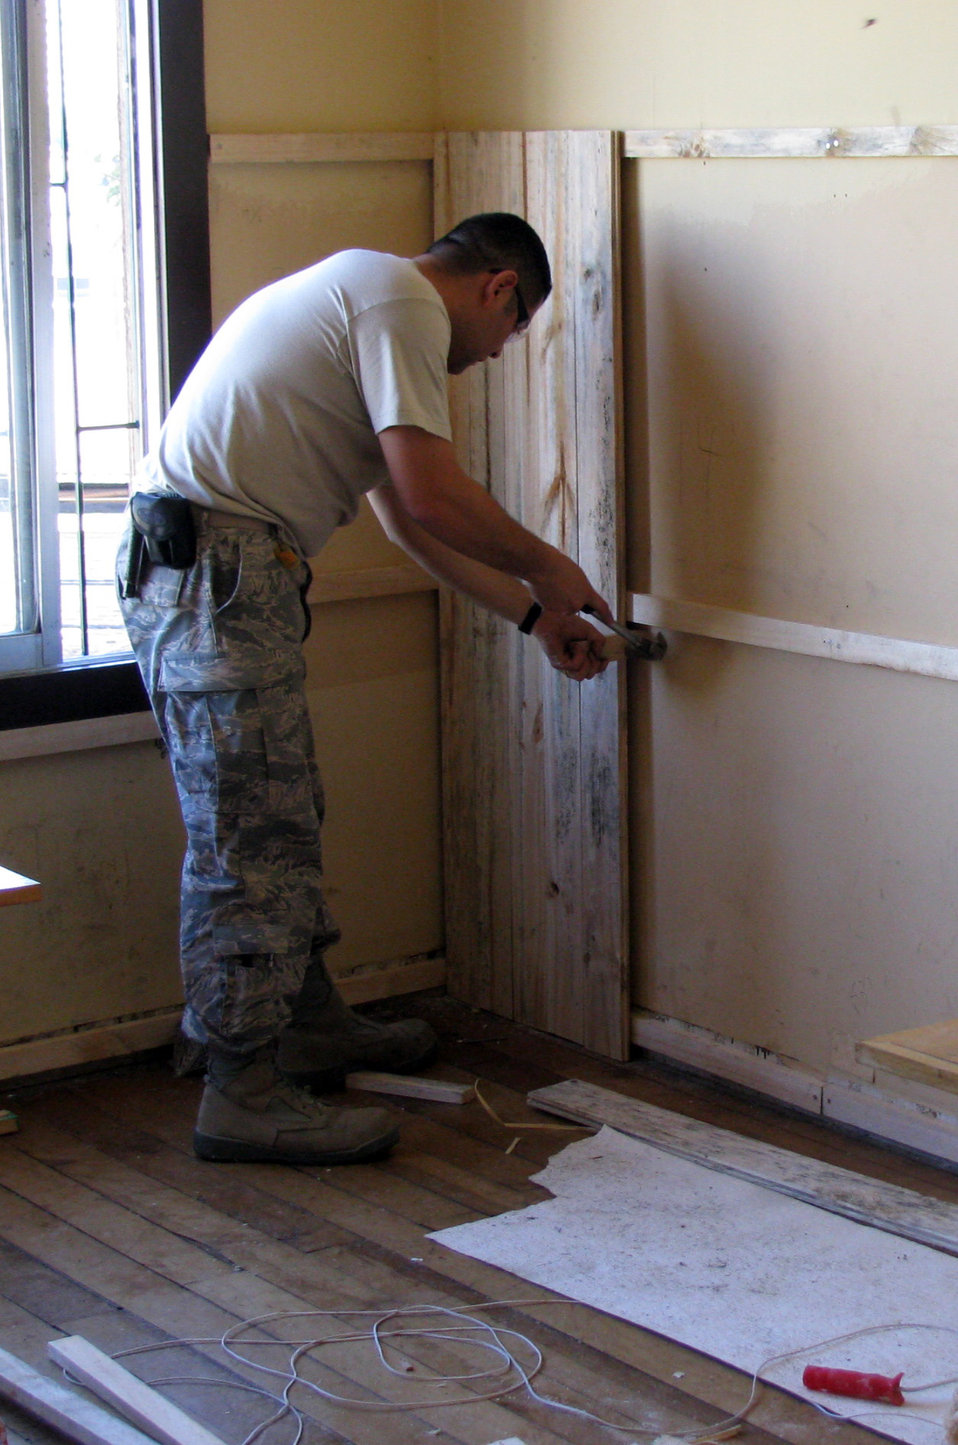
Red Horse Airmen renovate Chilean school?s library

Staff Sgt. Lorenzo Lara, one of two Rapid Engineer Deployable Heavy Operational Repair Squadron Engineer, or RED HORSE Airmen completed renovations of a dilapidated library at a Chilean culinary and hotel service high school in Quilpae, Chile Oct. 31 giving 80 students a comfortable and usable library the students and faculty can use for years to come. The renovation, the result of Operation Southern Partner ? a two-week Twelfth Air Force (Air Forces Southern) led event aimed at providing intensive, periodic subject matter exchanges with partner nations in the U.S. Southern Command area of focus ? took the two RED HORSE Airmen, and their Chilean civilian counterparts four days to complete; three days ahead of schedule.